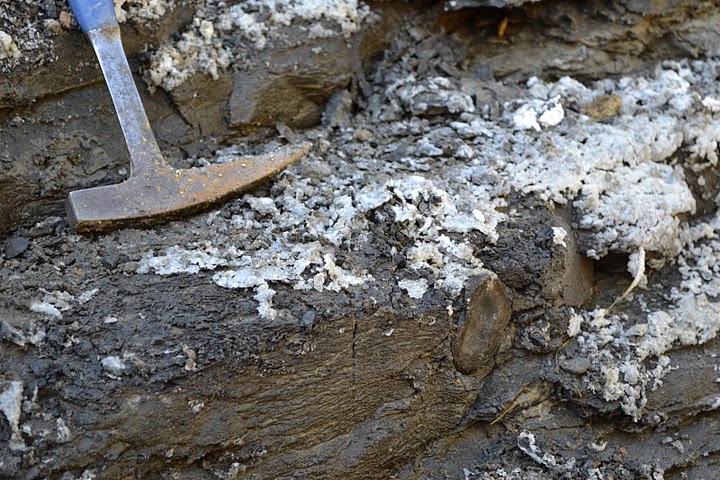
Uncovering Plesiosaur Vertebrae

A section of the fossil's vertebrae initially spanned the coulee when discovered by the hunter in October 2010. After high waters in May and June, however, all that remained visible of the vertebrae at the beginning of the excavation was a single piece of bone that disappeared in the creek bank (see below and to the right of the rock hammer).